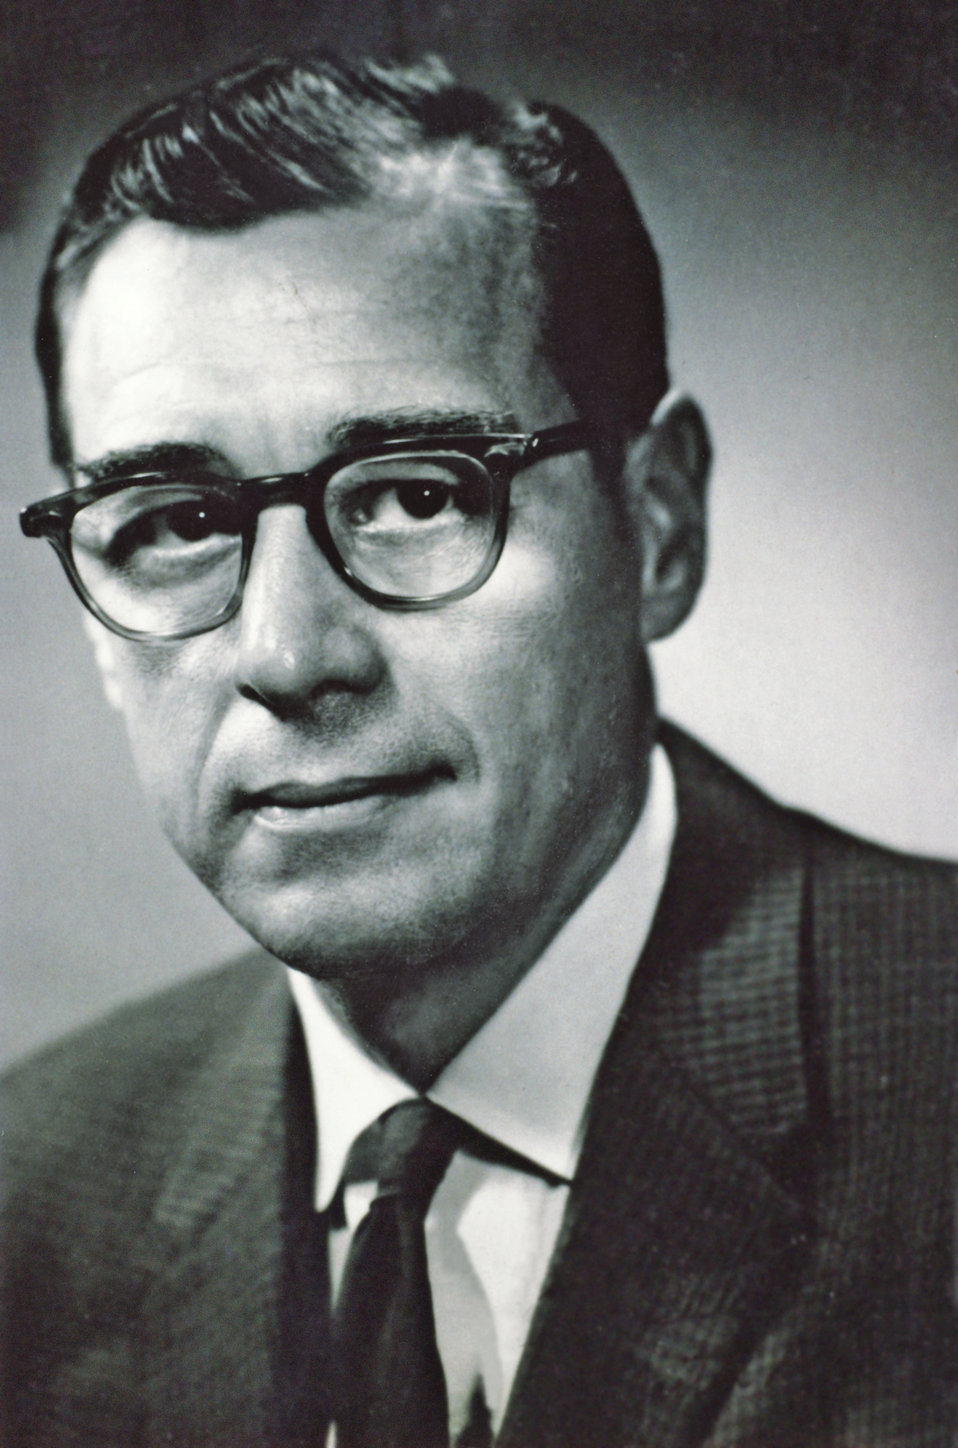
Martin D. Young, Sc.D. (1909 - 2003) was a career U.S. Public Health Service officer, and Director of the Gorgas Memorial Laboratory in Panama.